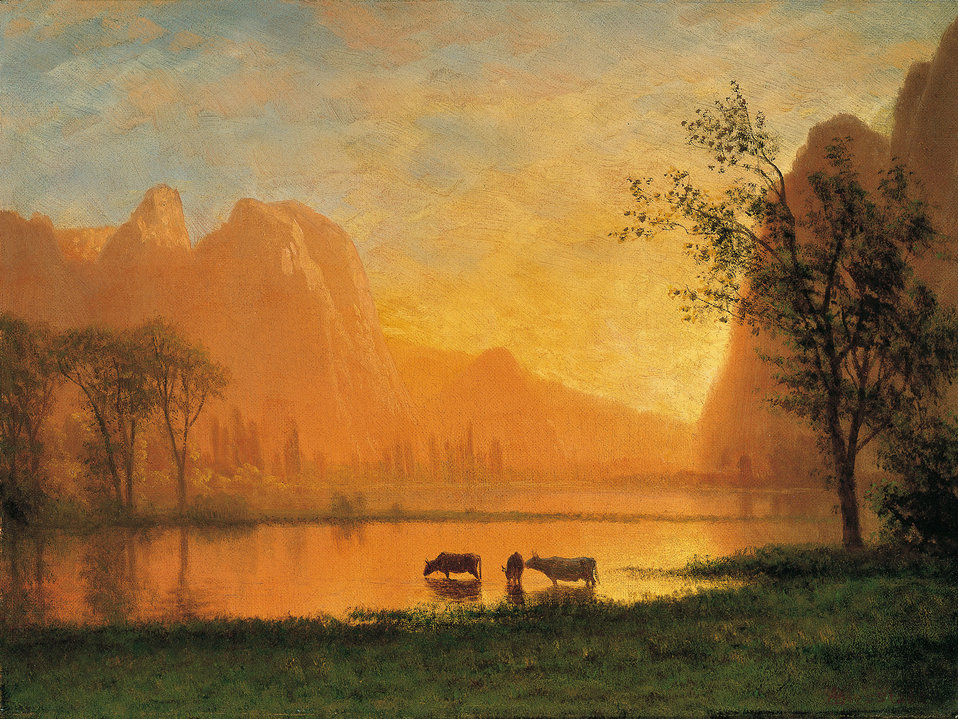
Albert Bierstadt - Sundown at Yosemite